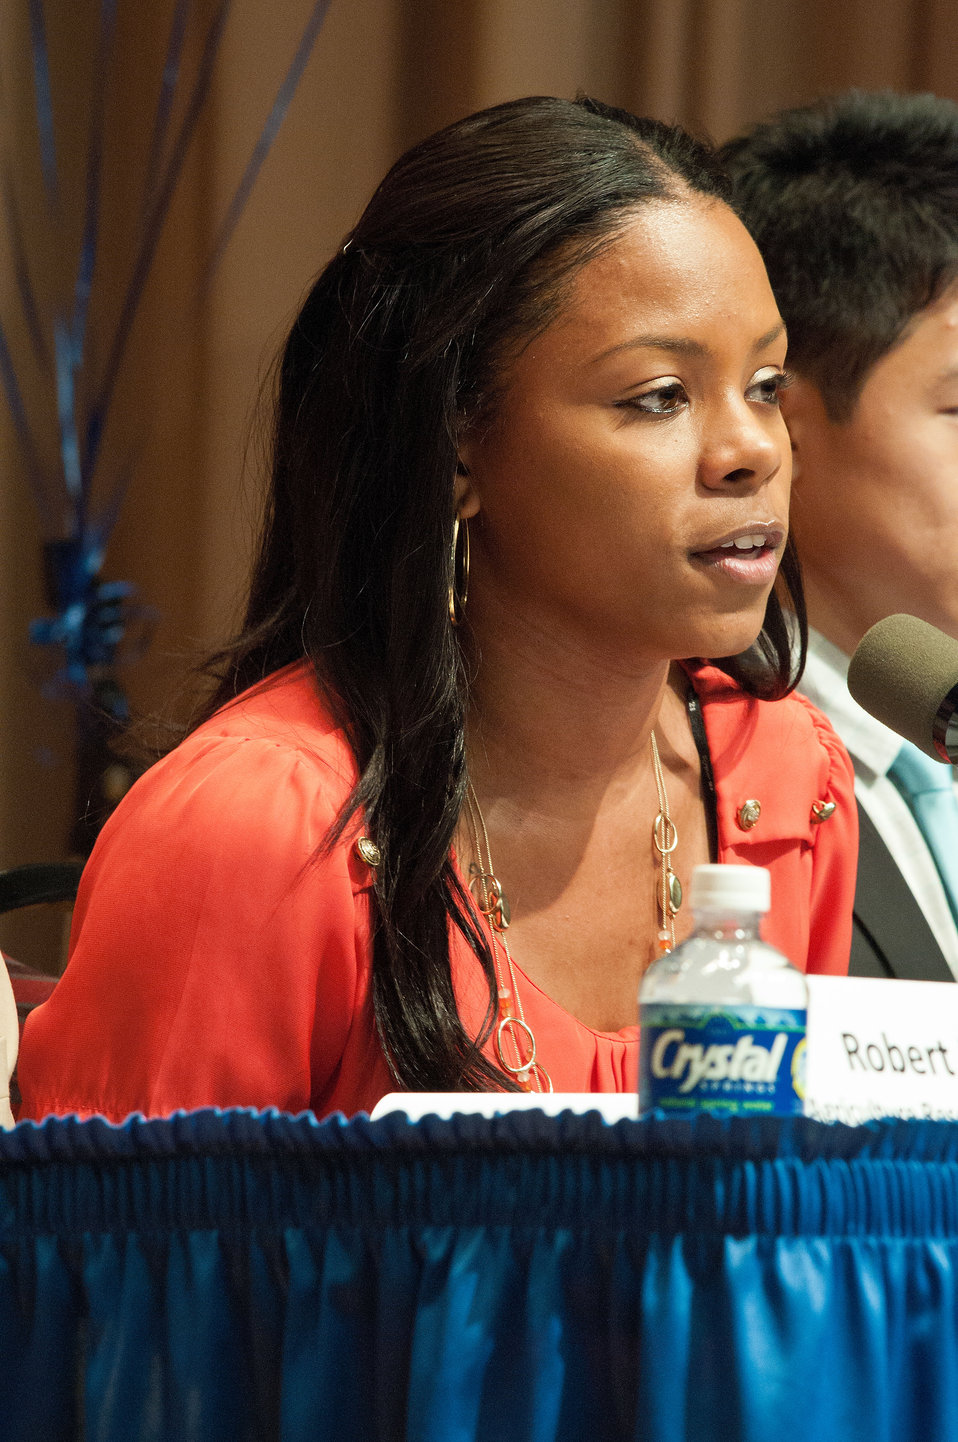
Danielle Collier, Farm Services Agency (FSA) intern and panel member listens to questions from the audience at the United States Department of Agriculture Intern Day and Panel Discussion, Transforming USDA’S Tomorrow Today” in Washington, D.C., on Wednesday, July 11, 2012.